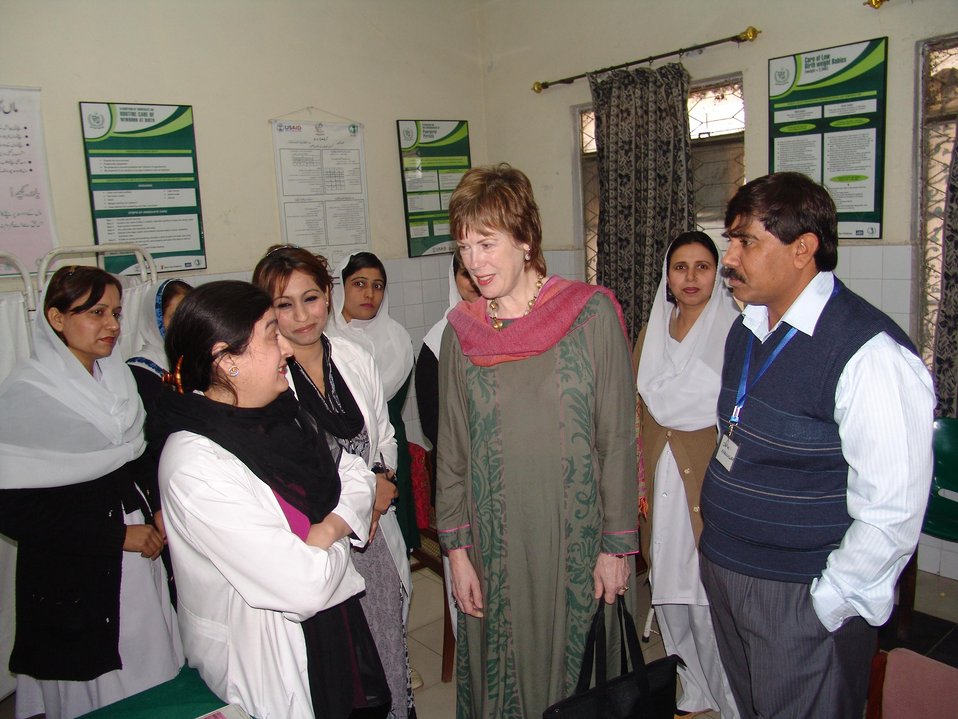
Rural Health Center Care for Mothers and Newborn Children

Gujar Khan, March 6, 2012 – Dr. Marilyn Wyatt, wife of U.S. Ambassador Cameron Munter talking with healthcare workers.